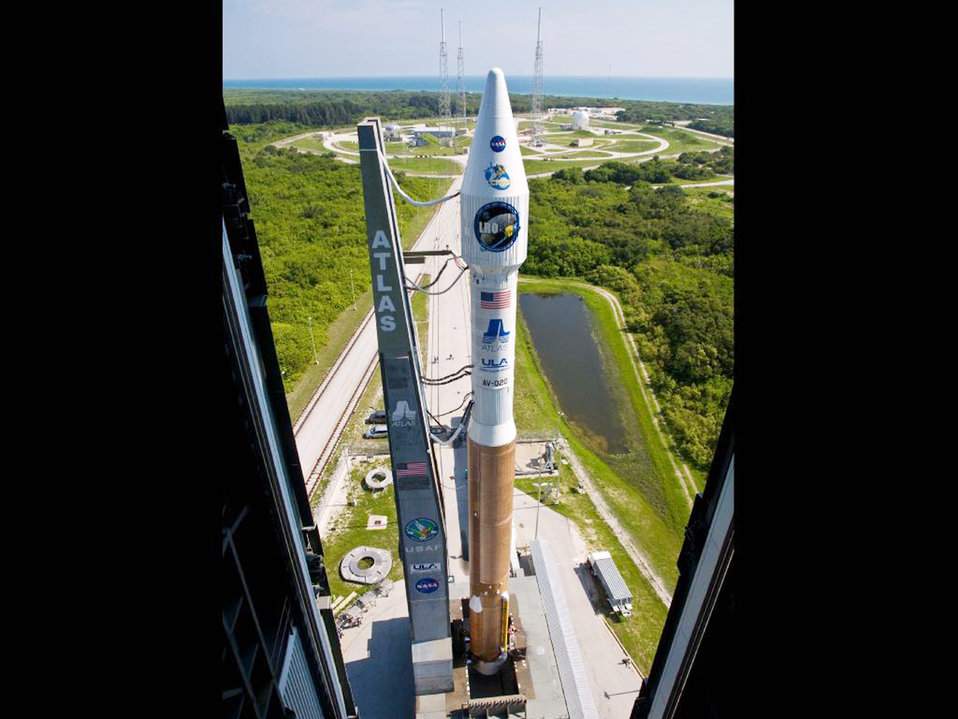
To the moon and beyond!

An Atlas V rocket carrying two lunar spacecraft systems successfully launched June 18 at 5:32 EDT from Cape Canaveral Air Force Station, Fla. Helicopter crews from Air Force Reserve Command's 920th Rescue Wing supported the launch by clearing the Eastern Range, the roughly 10-mile-wide by 70-mile-long strip of Atlantic Ocean that extends in the anticipated direction of flight.